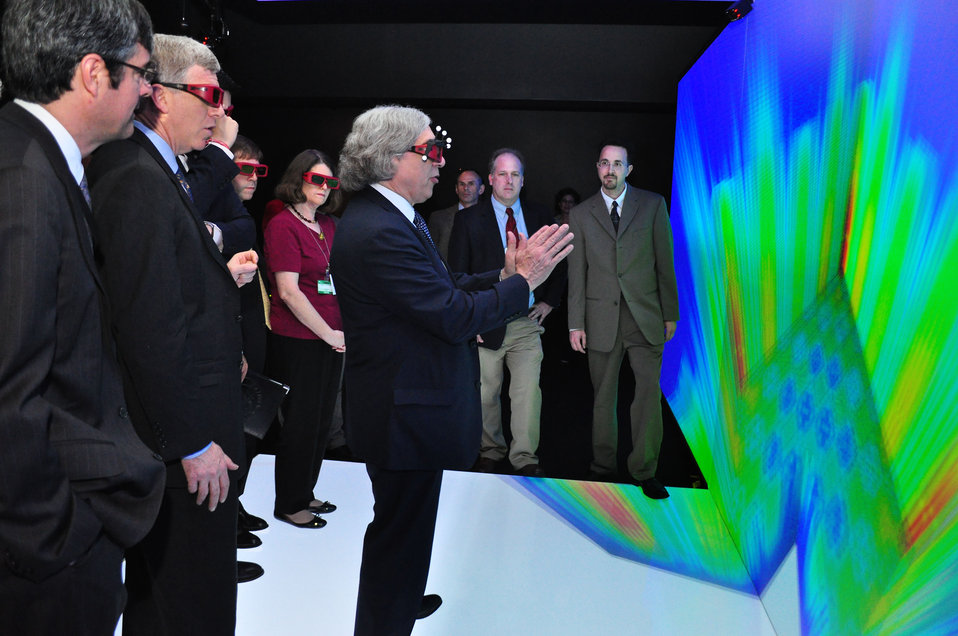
DOE Secretary of Energy Ernest Moniz in Oak Ridge

13-064 DOE photo Lynn Freeny 6-20-2013 Oak Ridge Tennessee